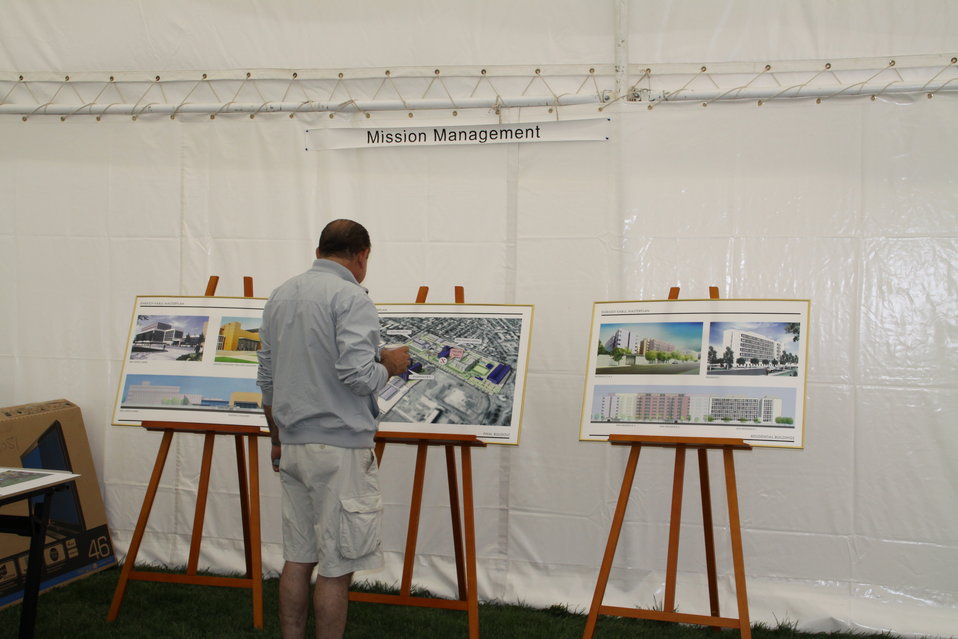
Official July 4th Event Preparation